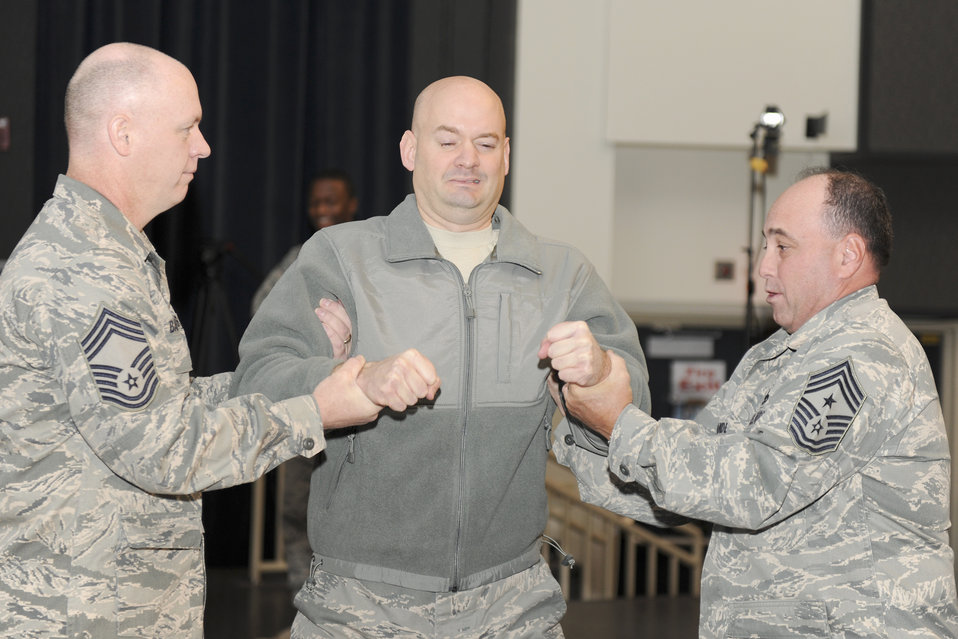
Tasers at Kunsan

Lt. Col. Mark Anarumo reacts to being shot in the back with a Taser during a demonstration Dec. 7, 2010, at Kunsan Air Base, South Korea. The Taser is the newest non-lethal-force asset option for security forces members to use to contain potentially harmful situations. Colonel Anarumo is the 8th Security Forces Squadron commander.